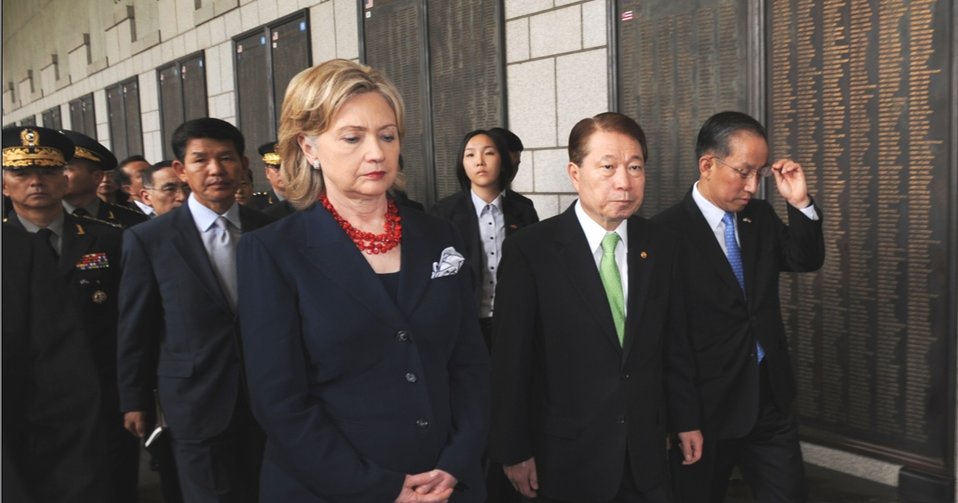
Secretary Clinton Pauses To Reflect

U.S. Secretary of State Hillary Rodham Clinton pauses to reflect on the shared sacrifice of U.S., Korean, and other UN soldiers before a list of all soldiers killed in the Korean War together with Republic of Korea Foreign Minister Yu Myung-hwan and Republic of Korea Defense Minister Kim Tae-Young and U.S. Defense Secretary Robert M. Gates (not pictured) at the Korean War Memorial in Seoul, South Korea, on July 21, 2010.